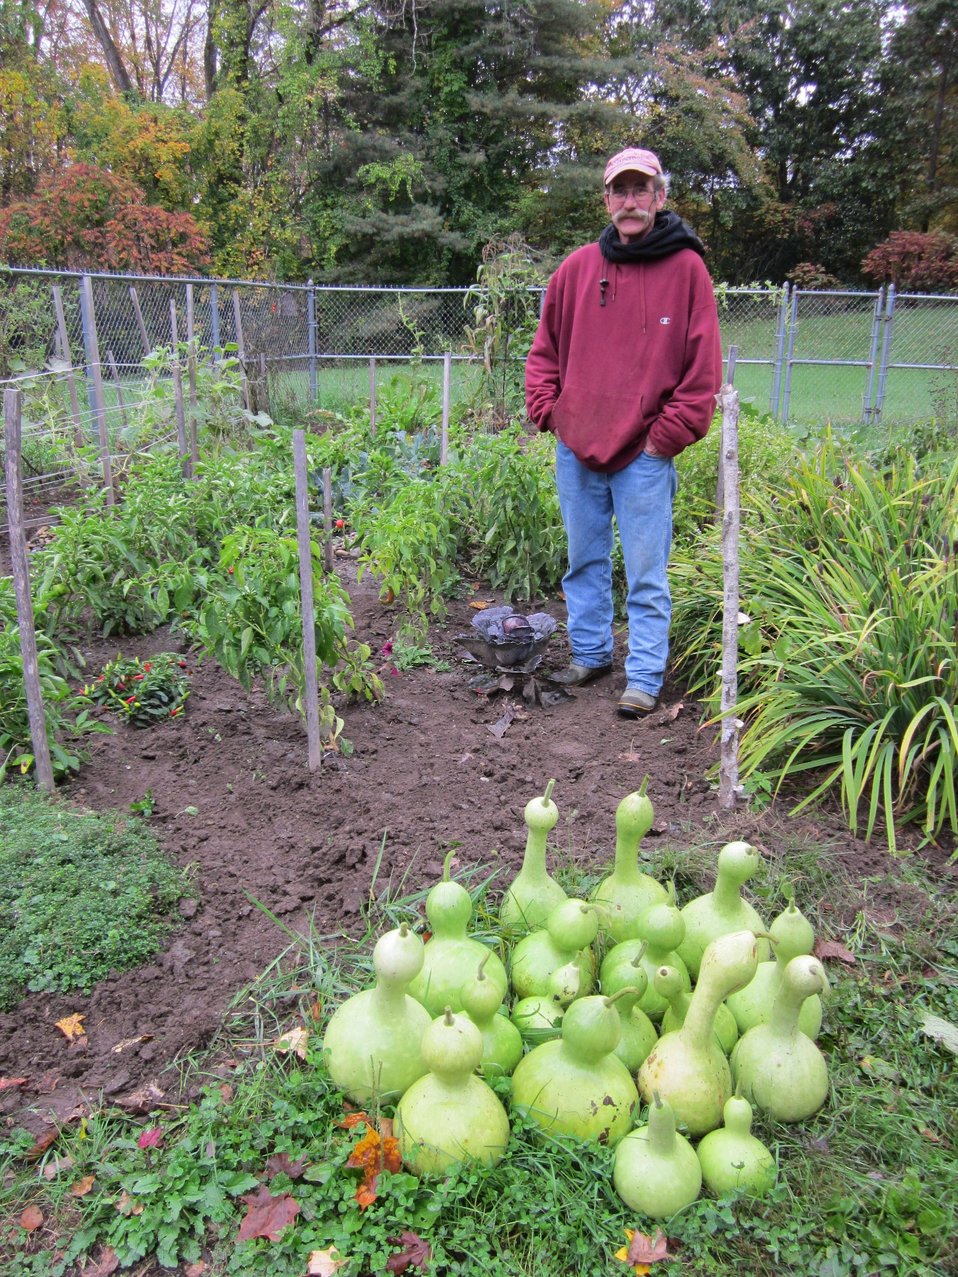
Veterans' Garden

October 12, 2012, Sunderland, MA: Volunteer Bob O'Neil stands in the garden he tends at the U.S. Fish and Wildlife Service's Richard Cronin National Salmon Station. Bob, a veteran of Vietnam and Purple Heart recipient, donates bounty from the garden to the Department of Veterans Affairs facility in Leeds, MA.